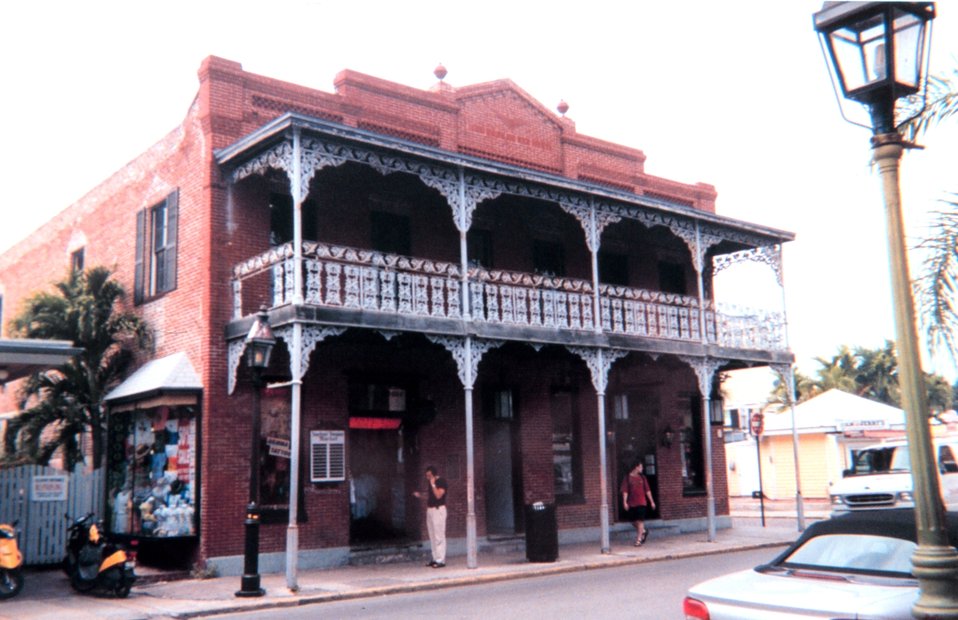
Store front with French-style iron-work in old town Key West.